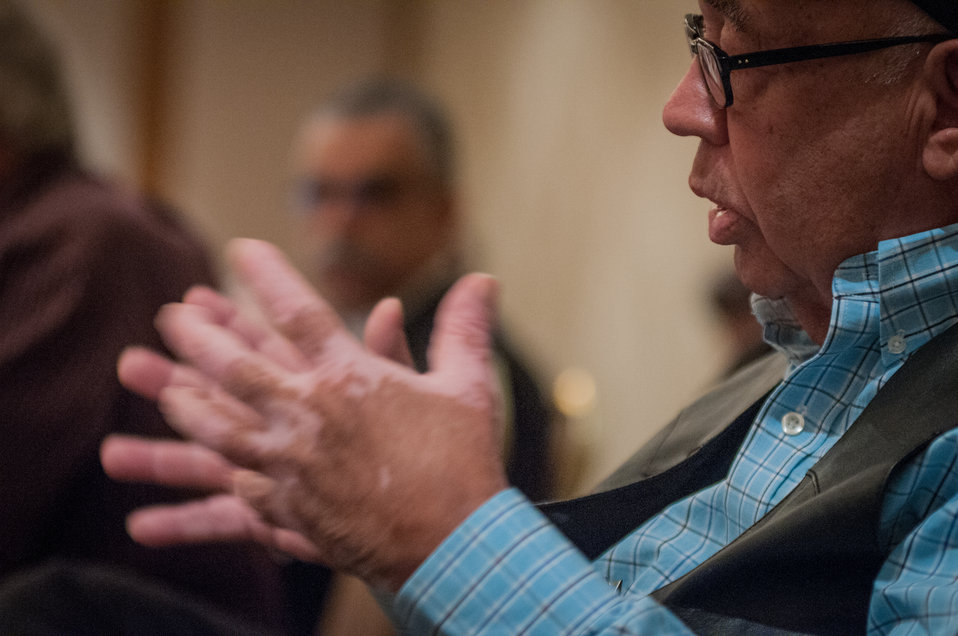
Lower Brule Sioux Tribe Chairman Michael Jandreau speaks to Agriculture Secretary Tom Vilsack, during the U.S. Department of Agriculture's (USDA) Council for Native American Farming and Ranching (CNAFR) advisory committee meeting, on Monday, Sep. 9, 2013 at the L'Enfant Plaza Hotel, in Washington, D.C. CNAFR was created to advise the Secretary on ways to eliminate barriers to participation for Native American Farmers and Ranchers in USDA programs. The Council was established as part of the Keepseagle settlement, and is conducted under the oversight of USDA's Office of Tribal Relations, which is part of the Office of the Secretary of Agriculture. Also in attendance is The Director of Tribal Relations Leslie Wheelock, Agriculture Assistant Secretary for Civil Rights Joe Leonard, Jr. Ph.D., Farm Services Administration Administrator Juan M. Garcia and Deputy Administrator for Farm Loans Programs Chris Beyerhelm.